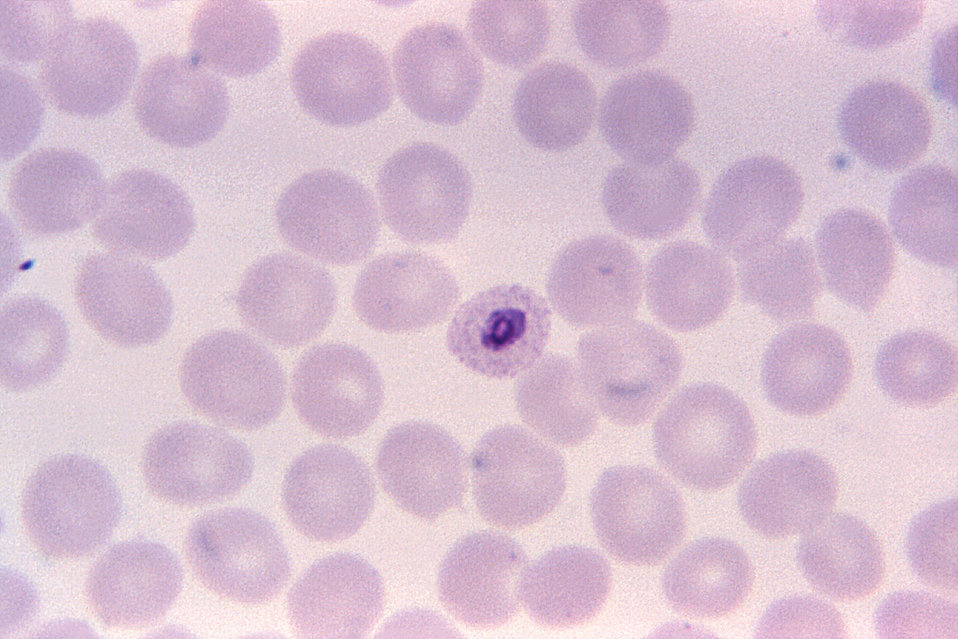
Magnified 1125X, this thn-film, Giemsa-stained photomicrograph revealed the presence of a growing Plasmodium ovale trophozoite, with a 'ring' nucleus.